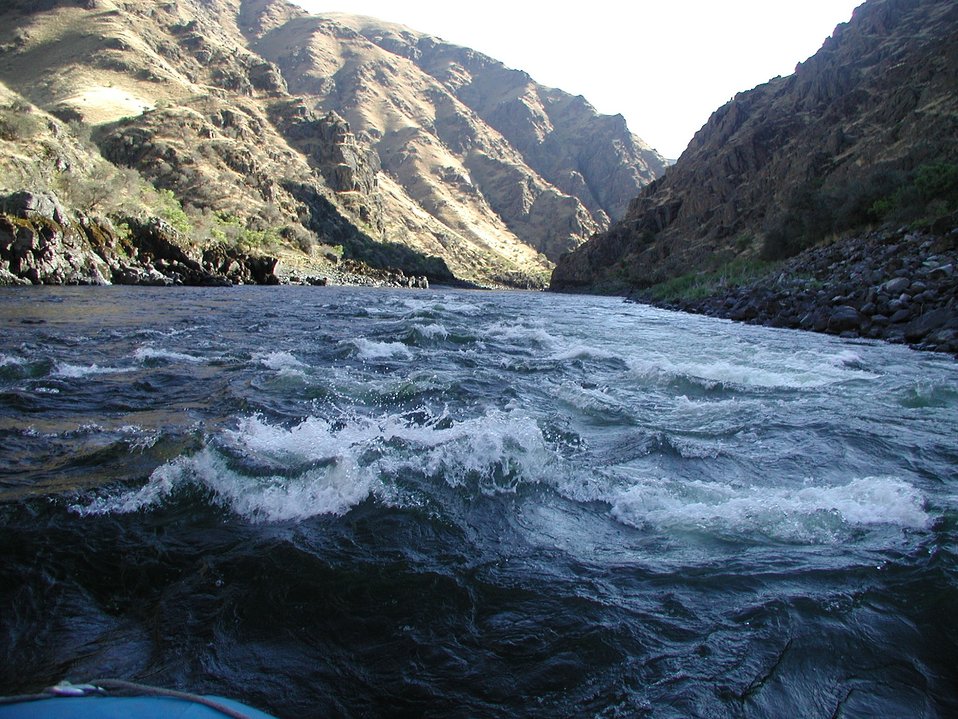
Scenic shot of Lower Salmon River Cottonwood Field Office UCSC Upper Columbia Salmon Clearwater District